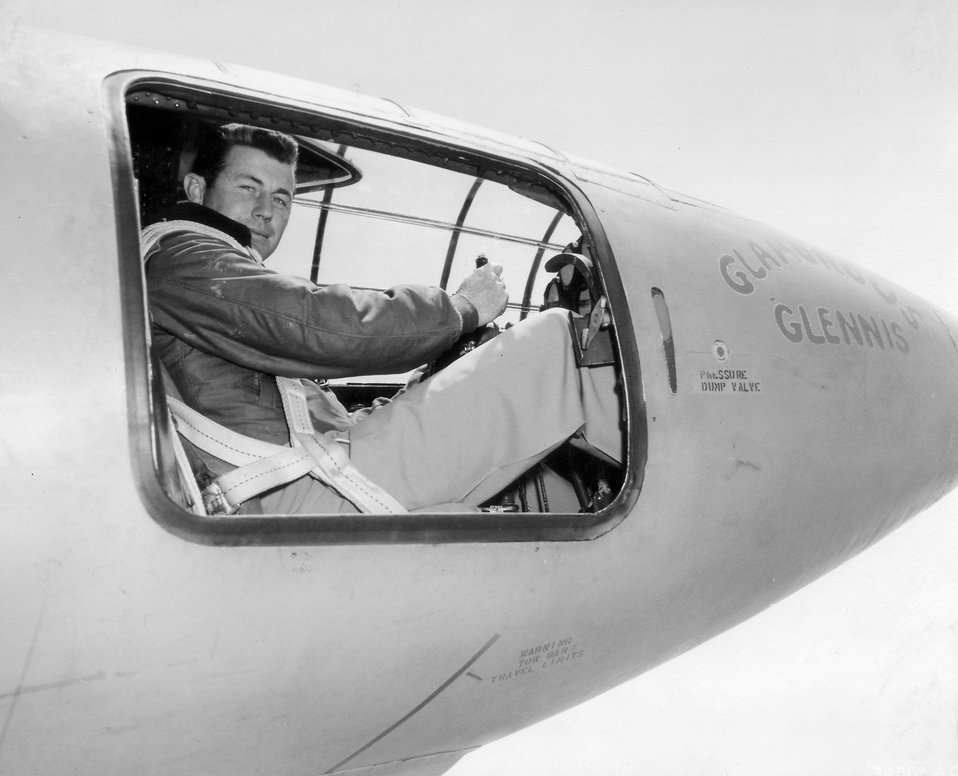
Capt. Charles E. Yeager seated in the cockpit of the Bell X-1 supersonic research aircraft. He became the first man to fly faster than the speed of sound on Oct. 14, 1947.